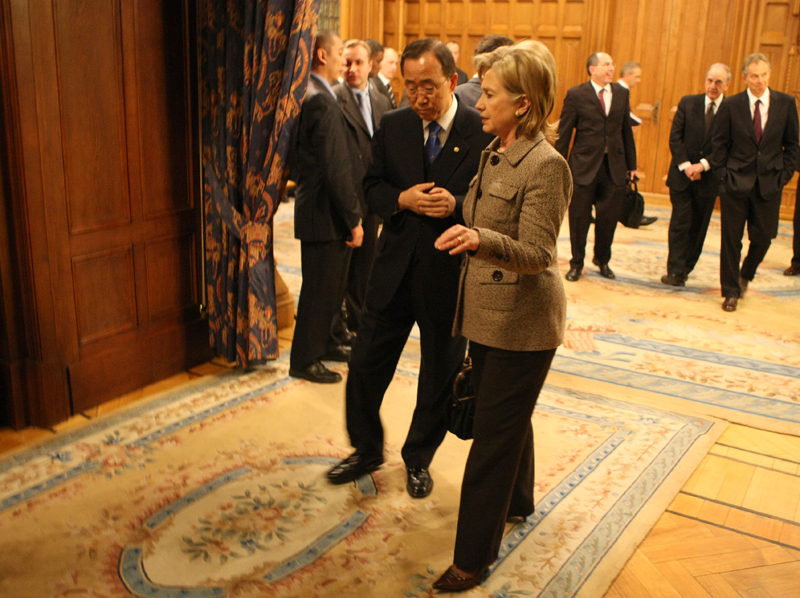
Secretary Clinton Speaks With UN Secretary-General Ban

U.S. Secretary of State Hillary Rodham Clinton speaks with U.N. Secretary-General Ban Ki-moon after the Quartet dinner in Moscow at the Osobnyak of the Ministry of Foreign Affairs, Moscow, Russia March 18, 2010.